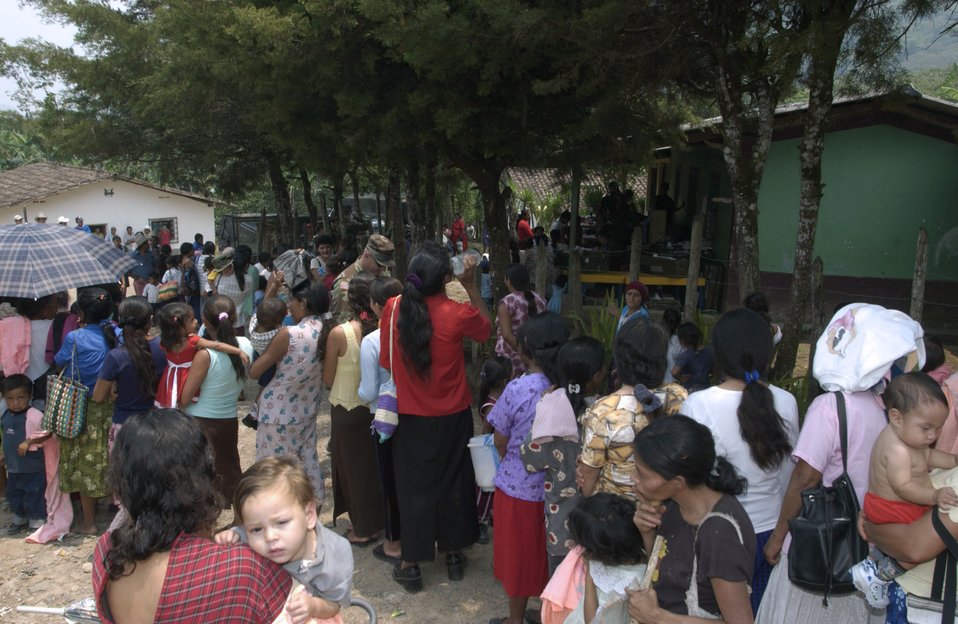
Medics provide human touch

RAUTECA, Honduras -- Hundreds of patients line up in the afternoon heat here waiting for a free medical examination from U.S. military medical practitioners. The patients come from miles around to take advantage of a temporary free clinic set up as part of a medical readiness exercise in the town. The 18-person Air Force and Army contingent of pediatricians, dieticians and medical technicians came from the San Antonio area for the eight-day humanitarian exercise.